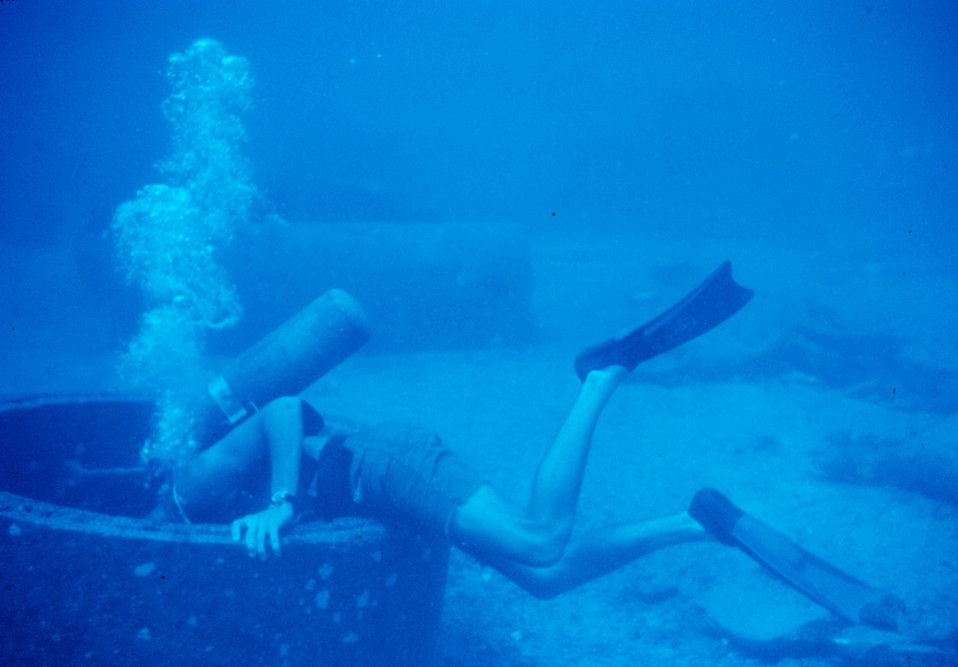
Investigating some of biota on the reef took close observations in difficult circumstances.